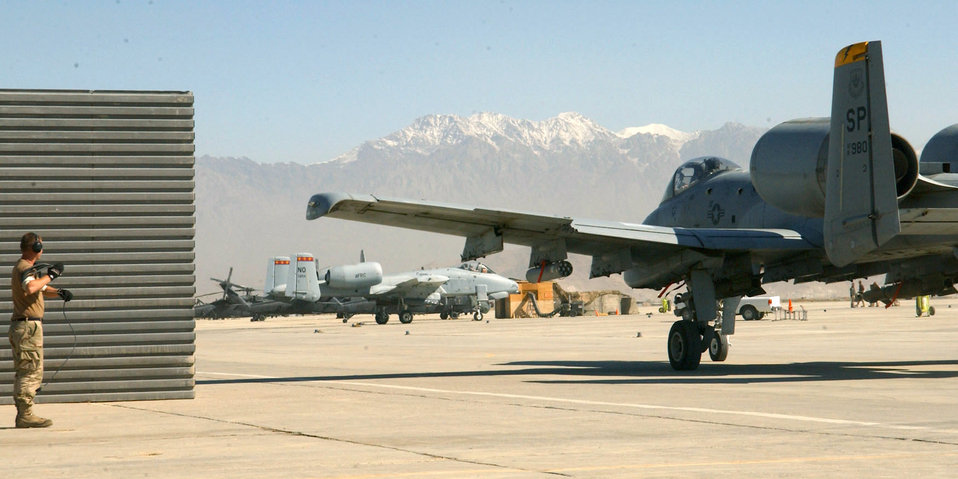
Active-duty, reservists combine forces in Afghan sky

BAGRAM AIR BASE, Afghanistan -- Airman 1st Class Jay Marshall watches as 81st Expeditionary Fighter Squadron A-10s taxi down the runway for takeoff Oct. 13. The fighter squadron here is comprised of A-10 Thunderbolts, operations support technicians and maintainers from Spangdahlem Air Base, Germany, and Naval Air Station Joint Reserve Base New Orleans. Airman Marshall is a crew chief with the 81st Expeditionary Aircraft Maintenance Squadron here and is deployed from Spangdahlem.